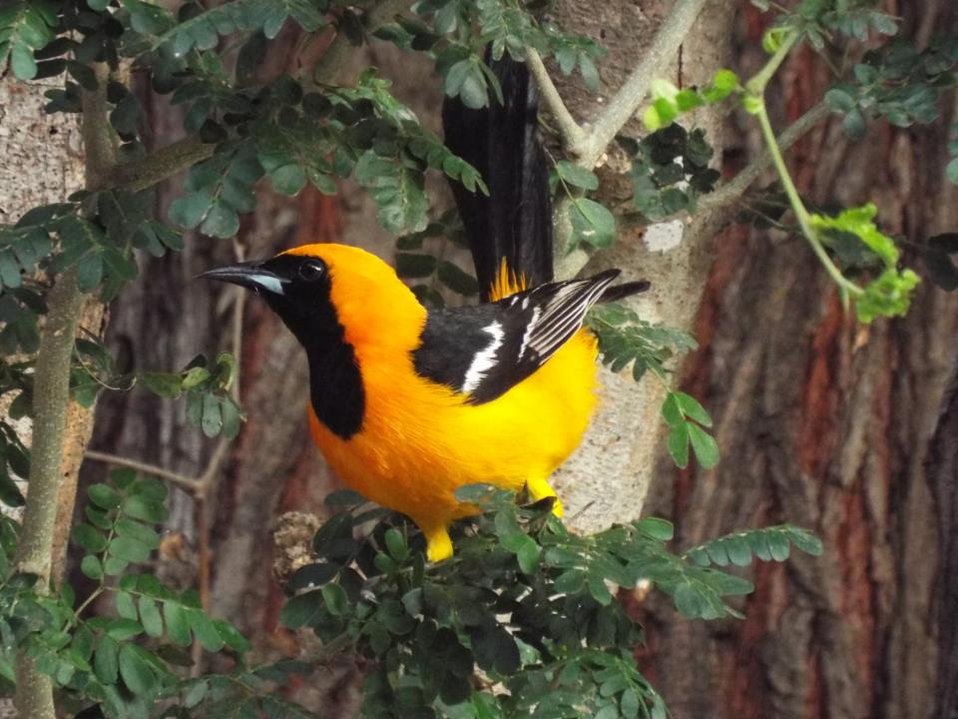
Hooded oriole

Santa Ana National Wildlife Refuge.